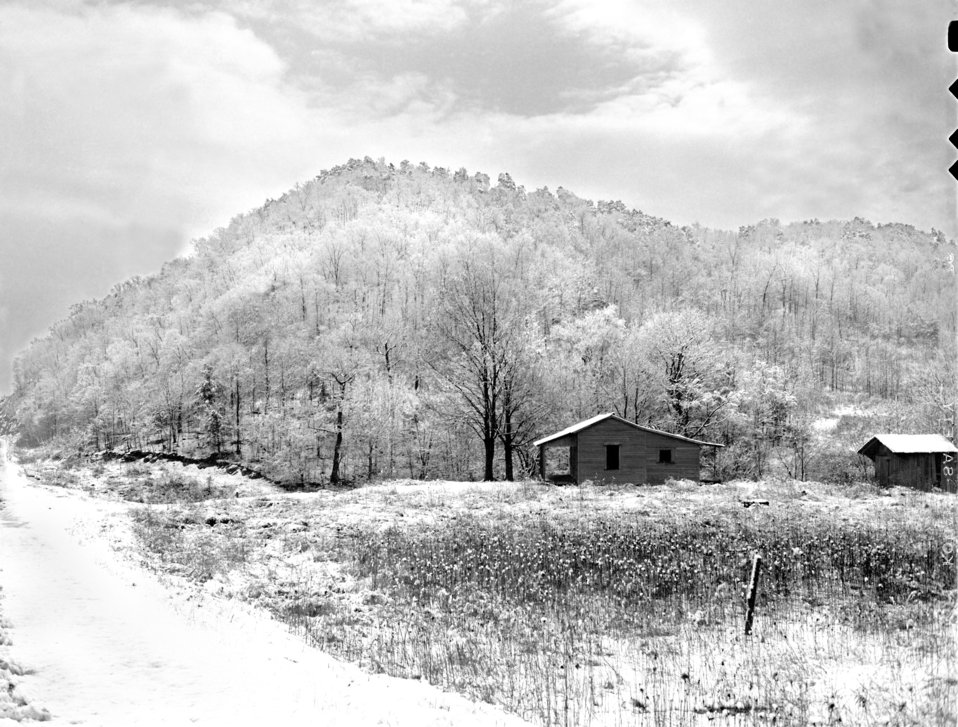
Snow Scene Oak Ridge 1947

3306-16aa DOE photo Ed Westcott 2-20-1947 Oak Ridge Tennessee